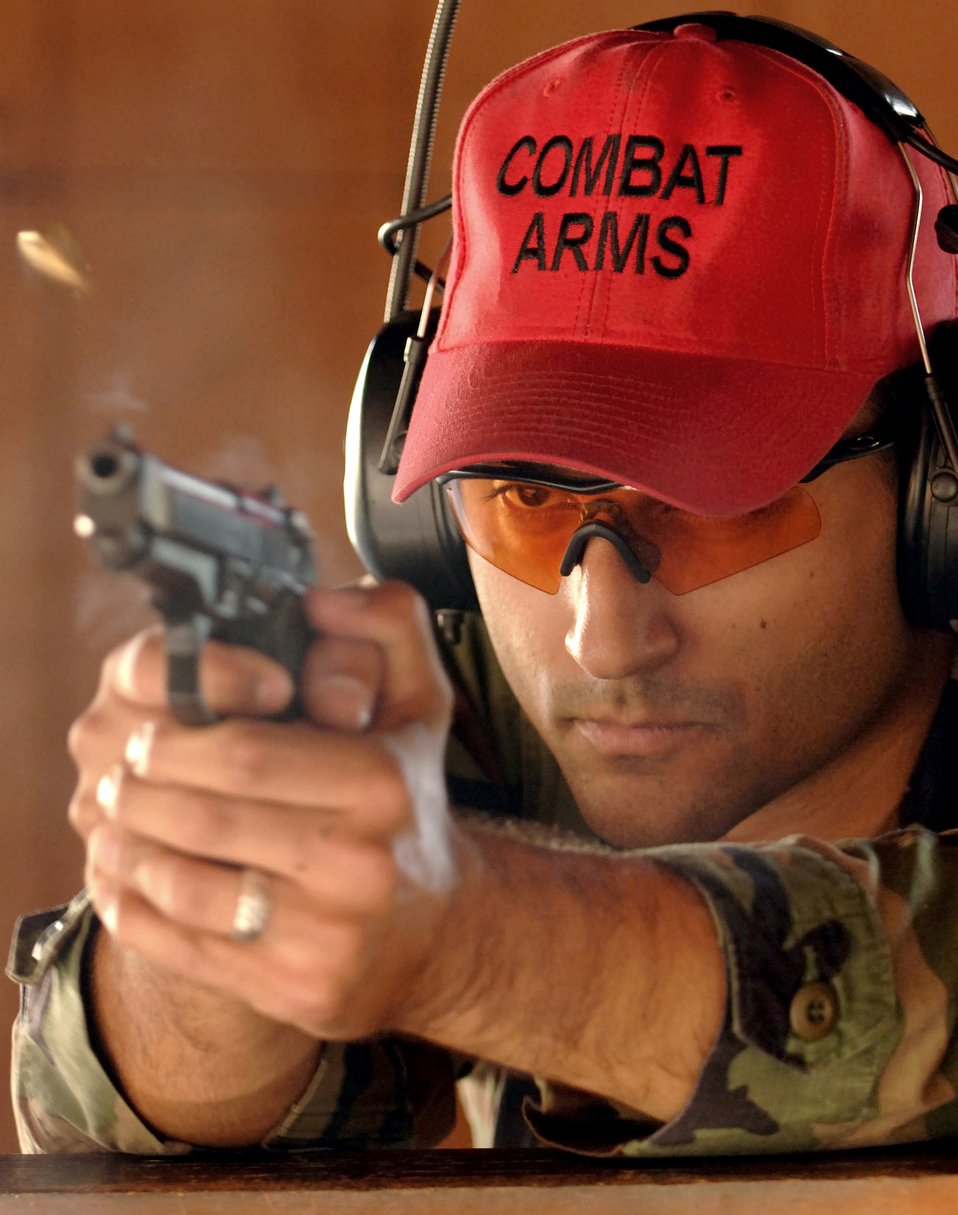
Eagle eye

Staff Sgt. Christopher Oshana fires a Beretta M-9 pistol for proficiency training at the MacDill Air Force Base, Fla., small arms range Monday, March 27, 2006. Sergeant Oshana is an instructor with the 6th Security Forces Squadron.